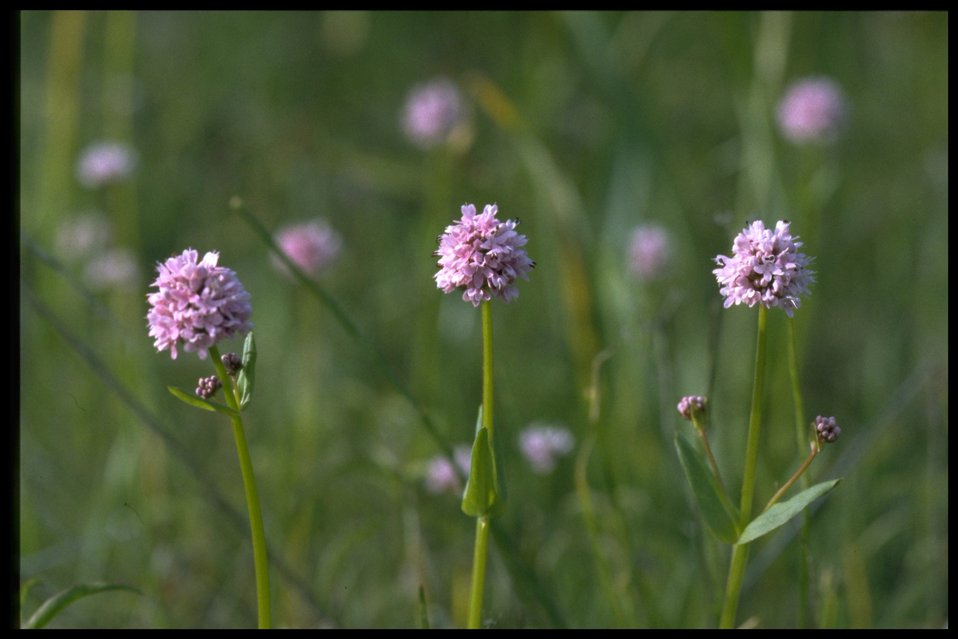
Medium shot of Plectritis congesta.